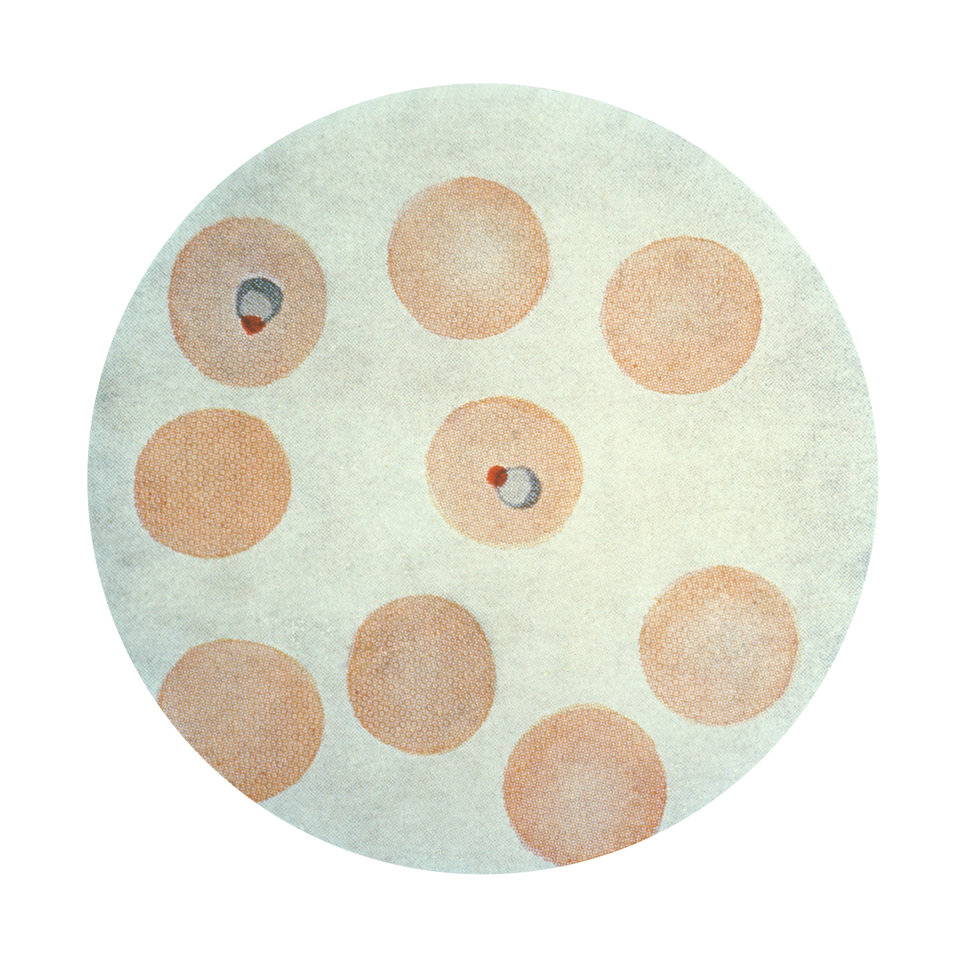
A photomicrograph of a Plasmodium malariae trophozoite in ring stage using Wright's stain. (x1500)